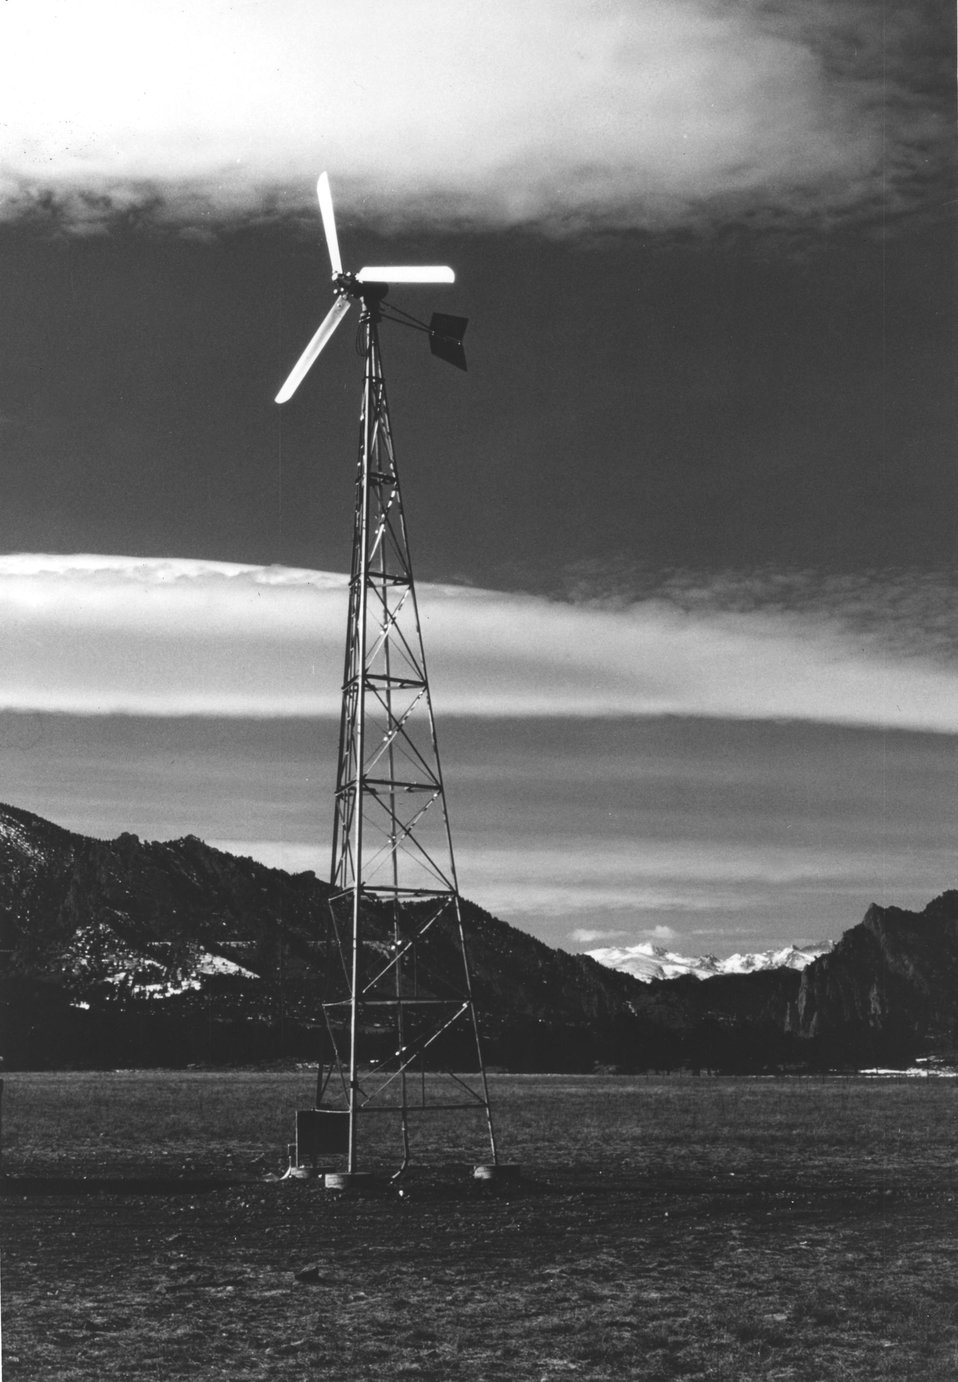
The Dunlite wind turbine, with 3 blades and a 12-foot rotor diameter, is being tested at the Energy Research and Development Administration's (ERDA) Rocky Flats, Colorado facility. c. 1977